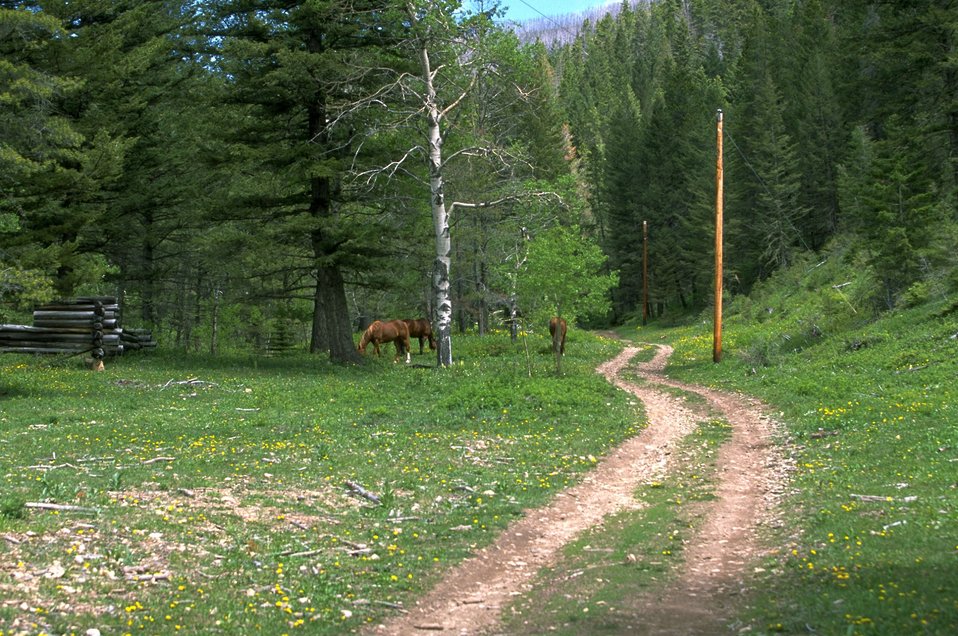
Horses grazing along a road leading into LimeKiln Canyon